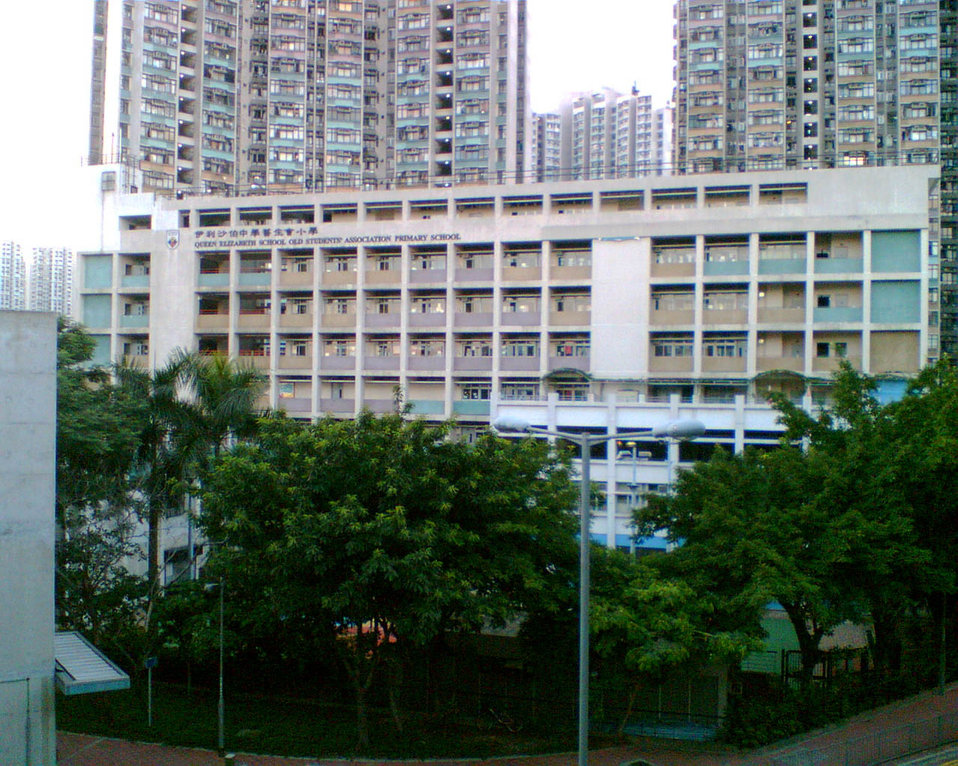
zh:伊利沙伯中學舊生會小學